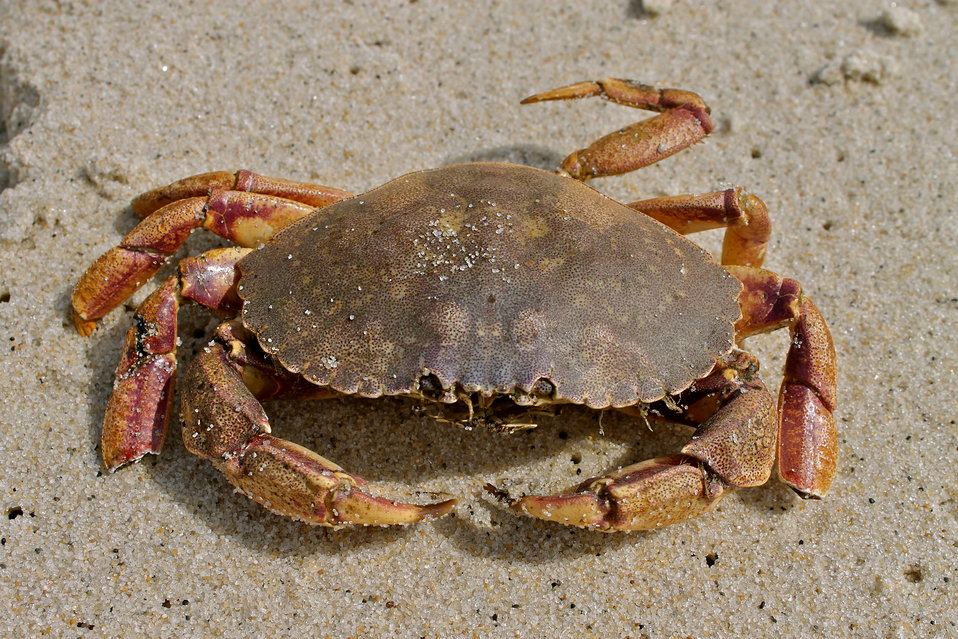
Jonah crab

Monomoy National Wildlife Refuge, MA.